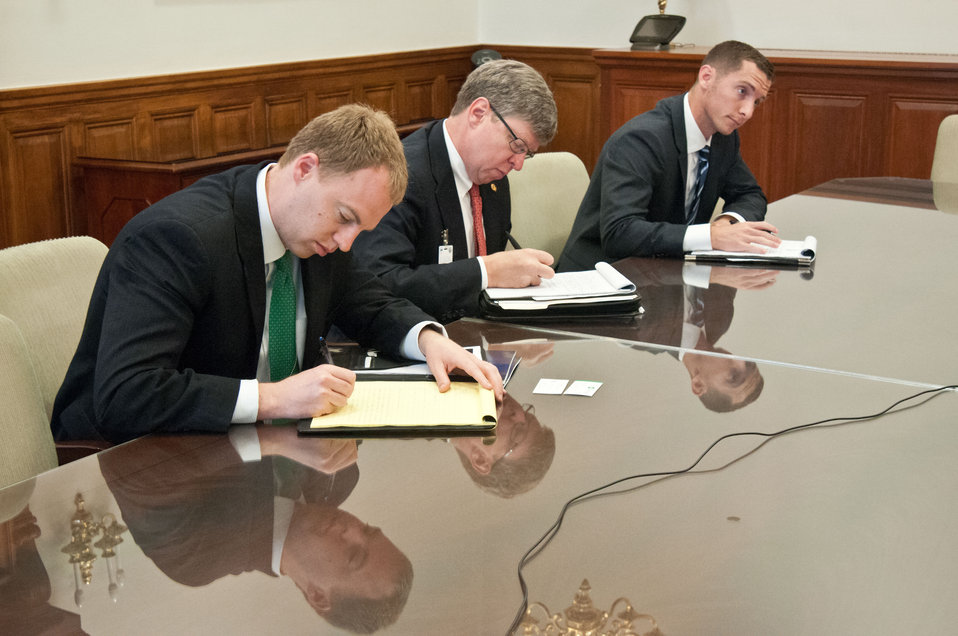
From left: Leif Oveson, National Telecommunications Cooperative Association, Brian Cavey, National Rural Electric Cooperative Association and Ben Husch, National Conference of State Legislatures were stakeholders invited to join a conference call with Agriculture Secretary Tom Vilsack and other Rural Council stakeholders in Washington, D.C., on Thursday, April 26, 2012, to discuss the economy of rural America at the United States Department of Agriculture.